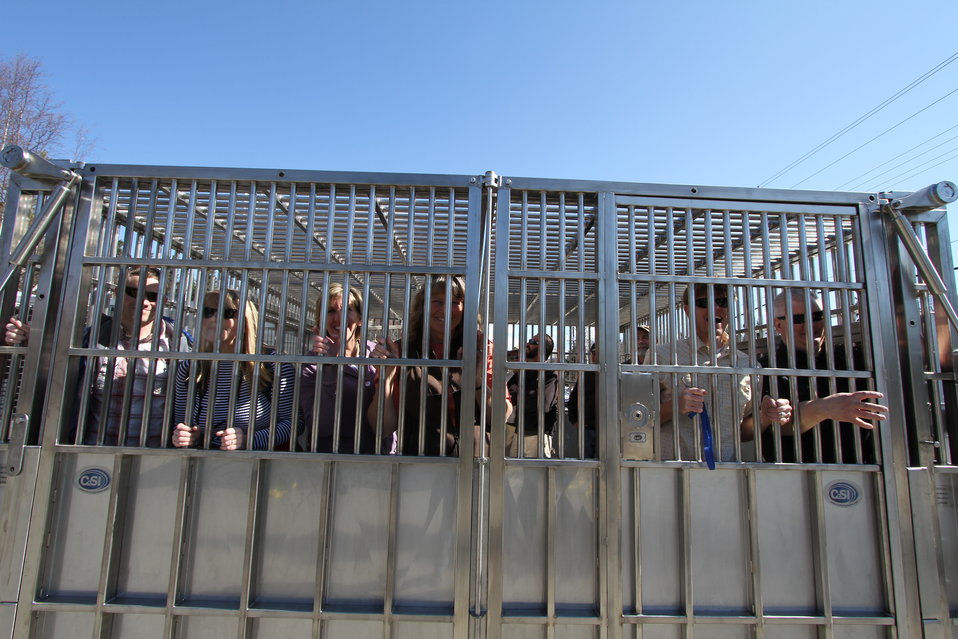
Polar bear holding module being set up at the Alaska Zoo before being shipped north. USFWS/Katrina Mueller